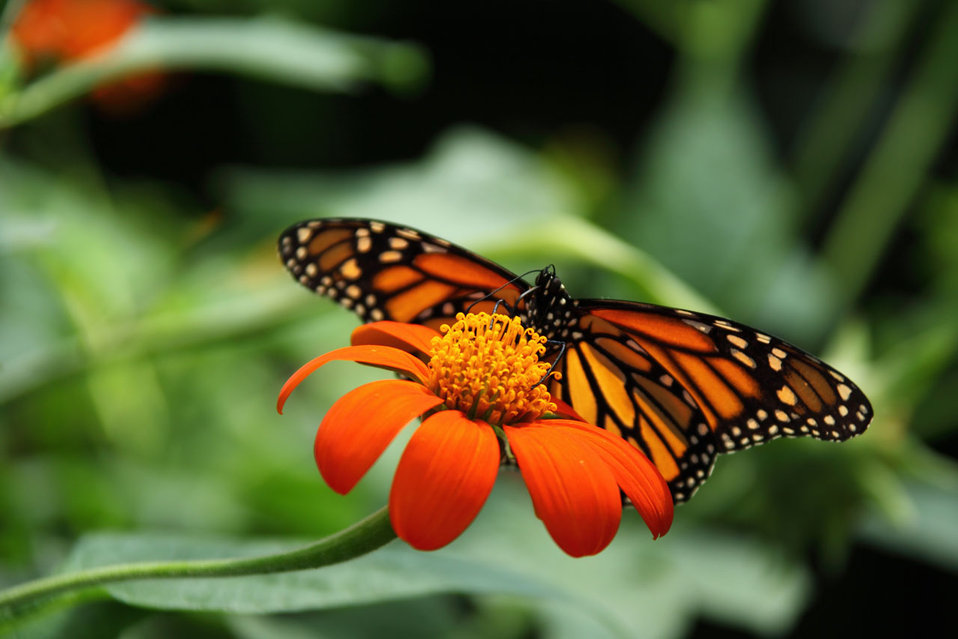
Monarch butterfly on mexican sunflower.